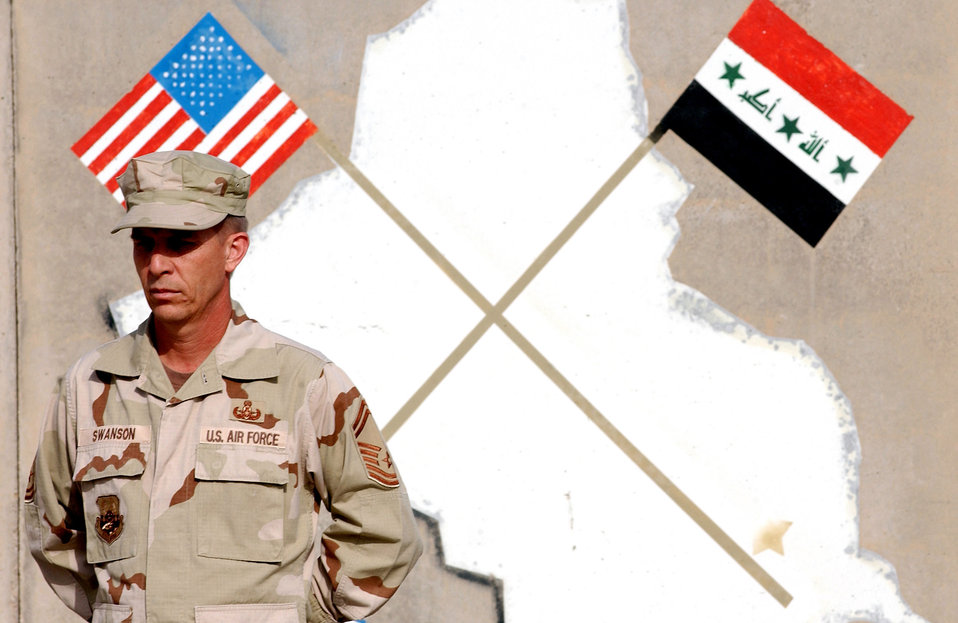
Fallen Airman Memorial recognized

Senior Master Sgt. Jeffrey Swanson stands at rest during a recognition ceremony for the Fallen Airman Memorial on Wednesday, April 26, 2006, at Ali Base, Iraq. Sergeant Swanson is assigned to the 407th Expeditionary Civil Engineer Squadron.